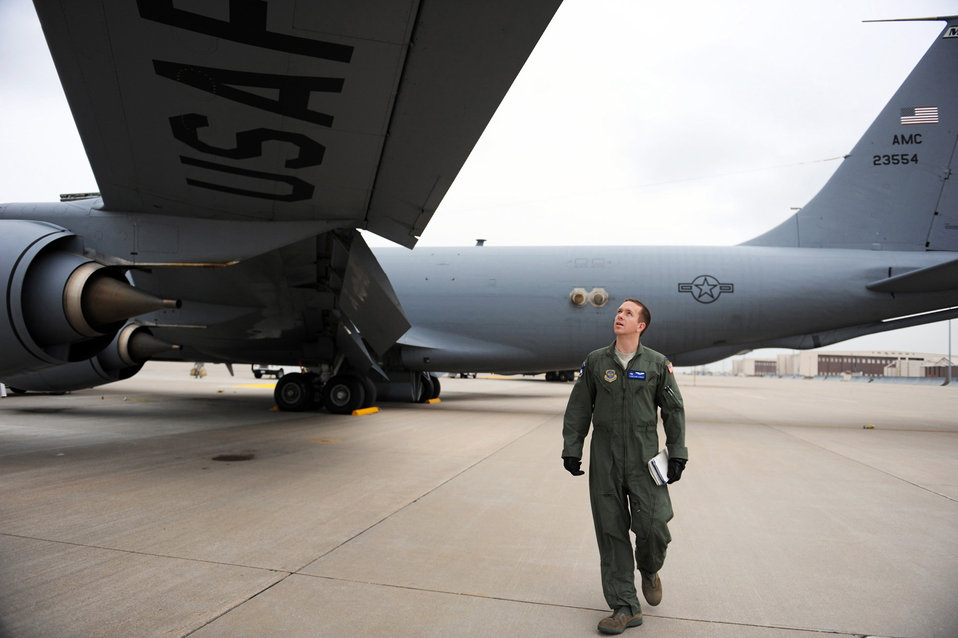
KC-135 Stratotanker refueling mission

Capt. Courtland Stanley conducts a preflight check on the historic